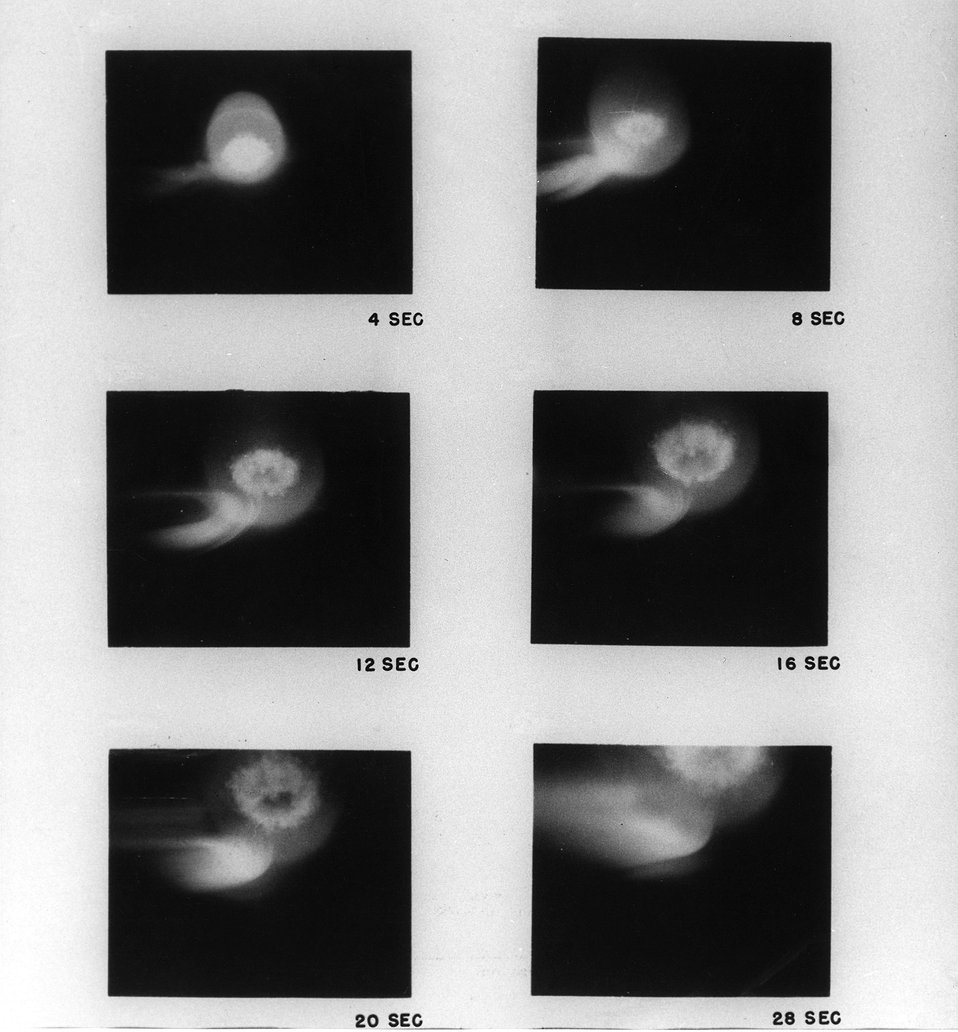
Late phases of TEAK fireball and formation of Northern Branch of Aurora as viewed from aircraft flying northwest of explosion.